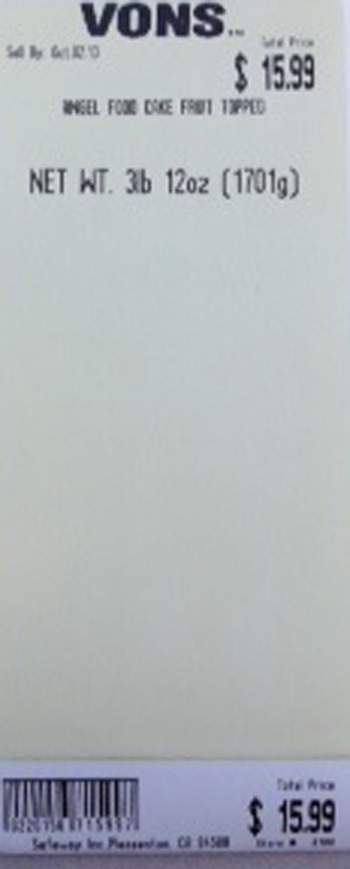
RECALLED – Angel Food Cakes

September 26, 2013 – Product Recall – Safeway Recalls Several Varieties of Angel Food Cake Due to Undeclared Soy and Milk Allergens.